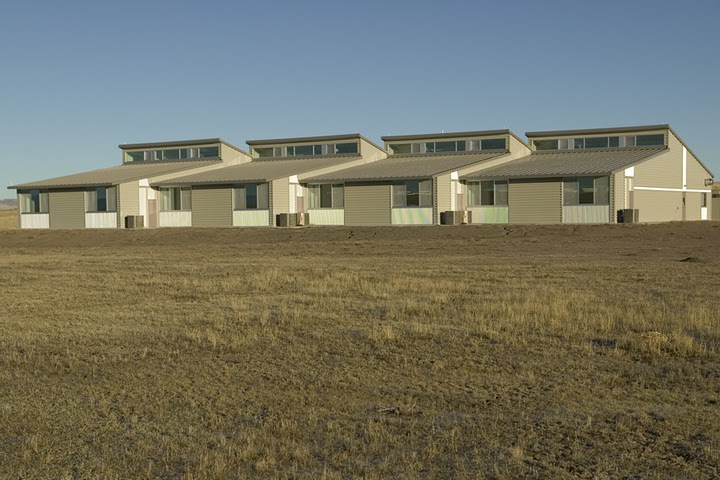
National Black-footed Ferret Conservation Center